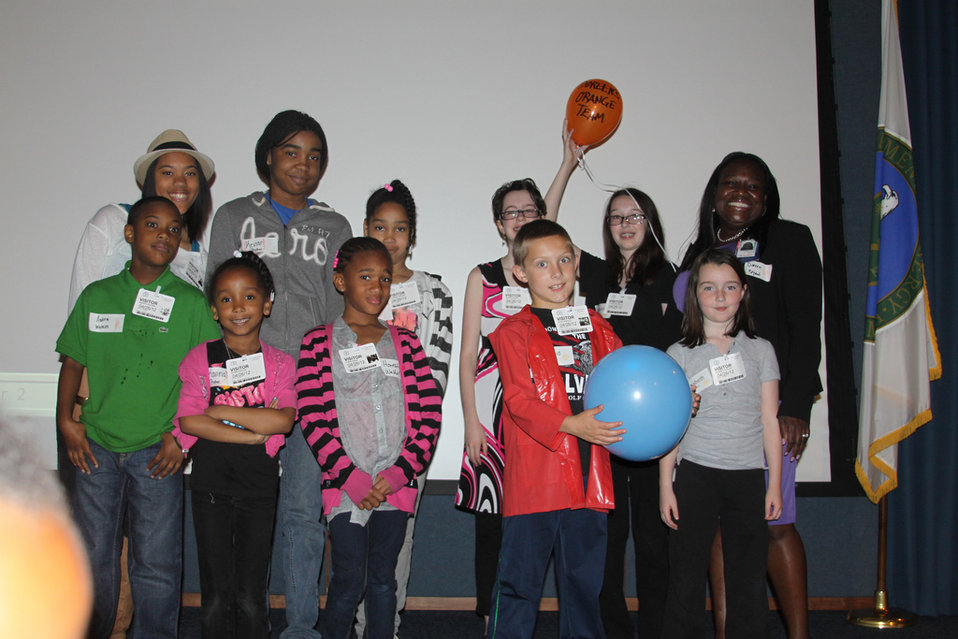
Doreen's Group